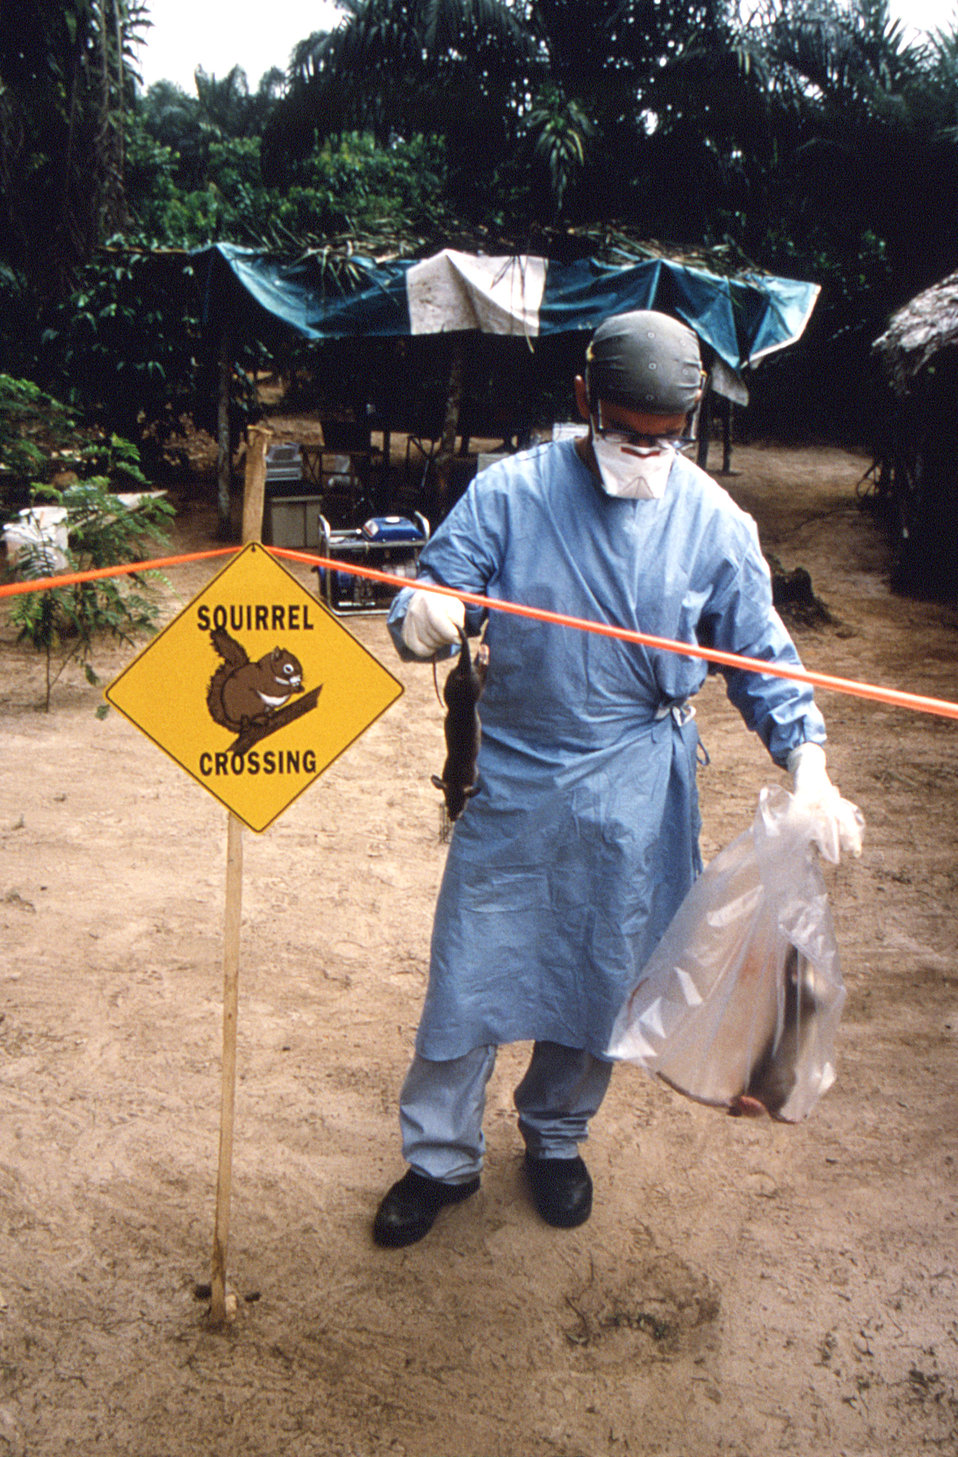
This image was created during an investigation into an outbreak of monkeypox, which took place in the Democratic Republic of the Congo (DRC), 1996 to 1997, formerly Zaire. In this particular view, standing outdoors in front of a Katako-Kombe Health Zone village laboratory's 'hot line', R. Joel Williams, D.V.M., was pictured wearing a suit of medical scrubs, latex gloves, and a facemask, as he was handling two newly-acquired Gambian rats, Cricetomys emini. During the epidemiologic study, 19 Gambian rats were tested for monkeypox, using the monkeypox virus plaque reduction neutralization antibody assay, resulting in 3 testing positive.